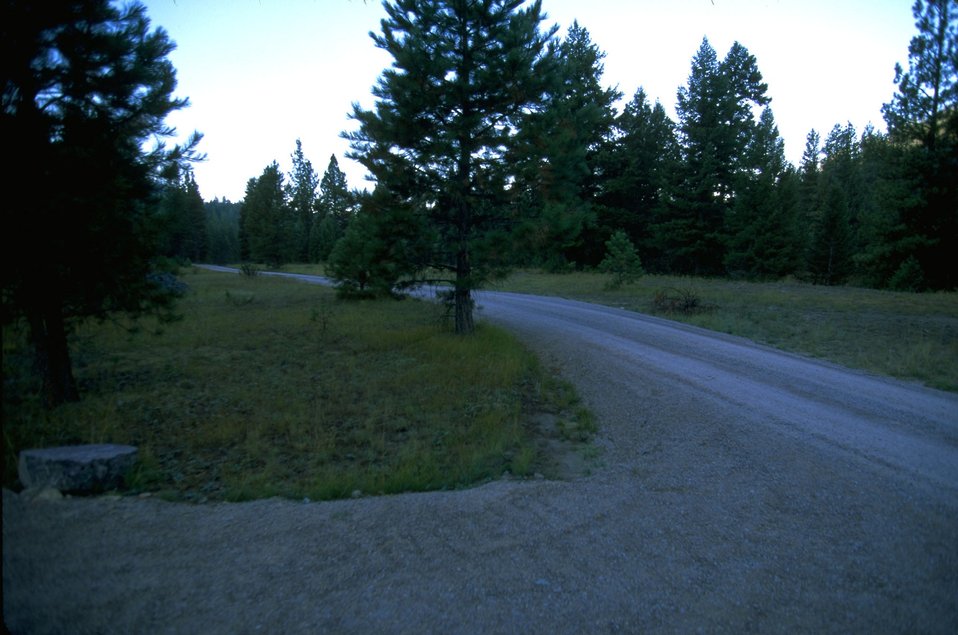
McNamara Road along Blackfoot River